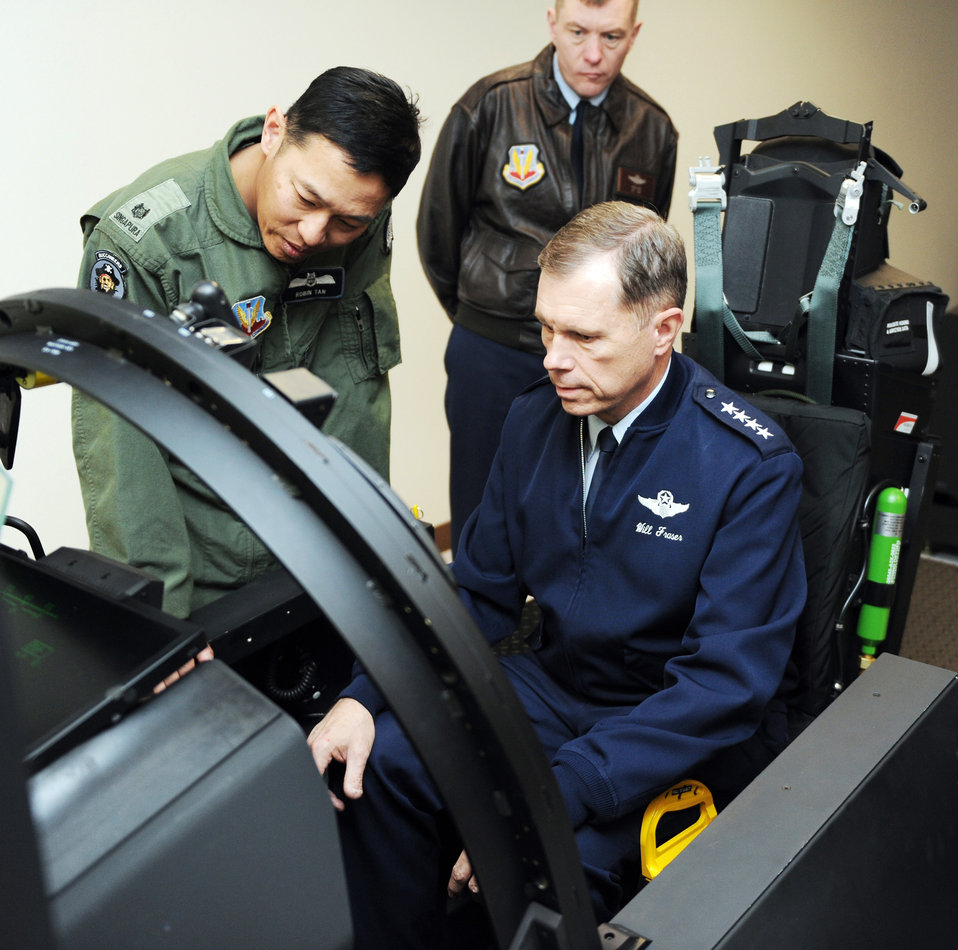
Air Combat Command leader visits Mountain Home Airmen

Republic of Singapore Air Force Maj. Robin Tan shows Gen. William M. Fraser III the controls on the F-15SG flight simulator March 8, 2010, at Mountain Home Air Force Base, Idaho. The F-15SGs belong to the RSAF squadron stationed at Mountain Home AFB as part of the Peace Carvin V agreement. General Fraser is the commander of Air Combat Command.